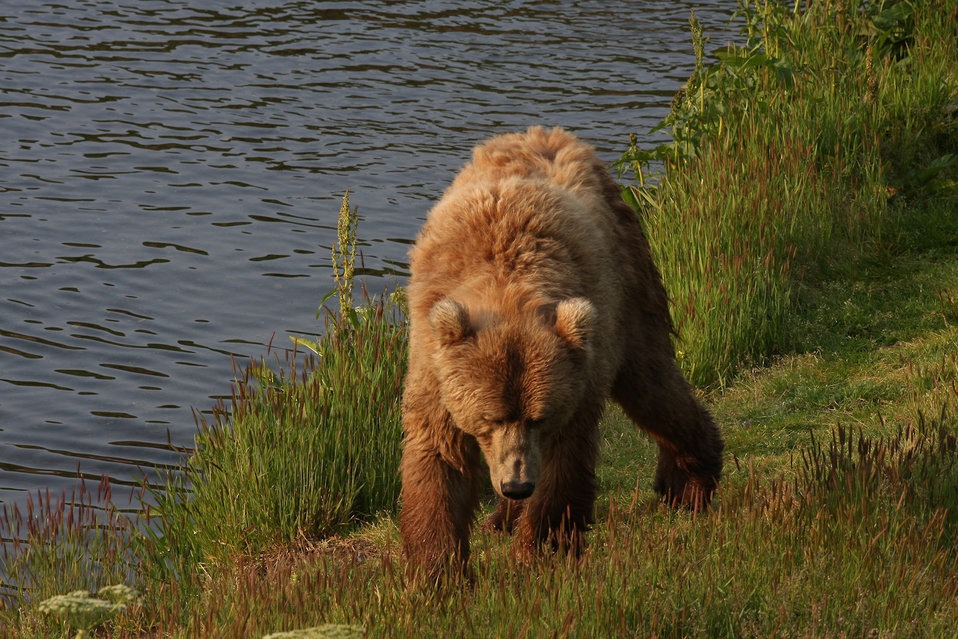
Sow at Dog Salmon River

Kodiak brown bear.
Lisa Hupp/USFWS